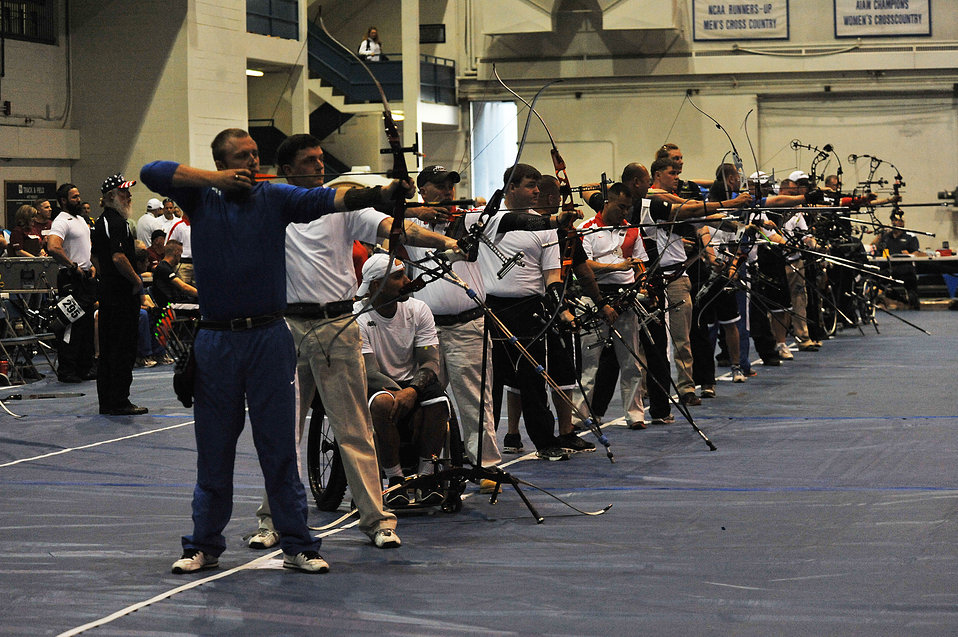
Warrior Games

Kendall Madden and other athletes take part in the archery competition of Warrior Games 2012 at the U.S. Air Force Academy in Colorado Springs, Colo., May 2, 2012. Madden is with the Air Force team.